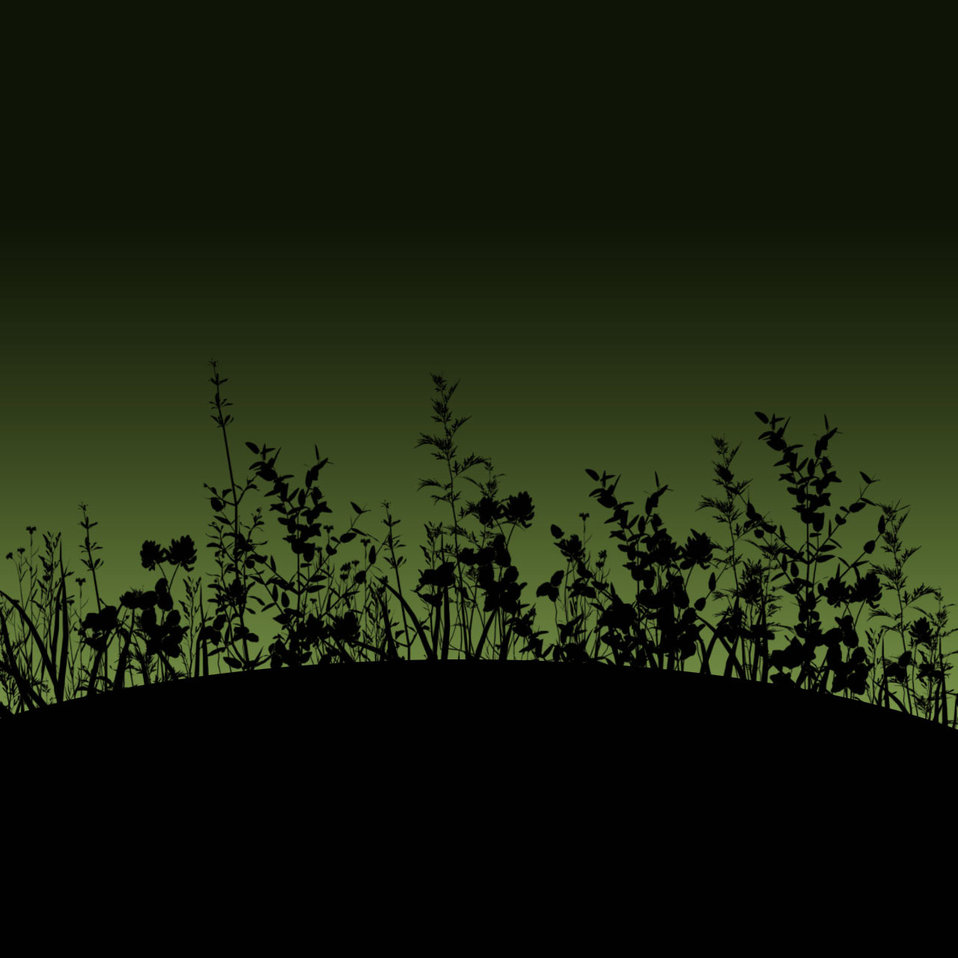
Flowers in another place

Flower silhouettes on a green dusky sky.